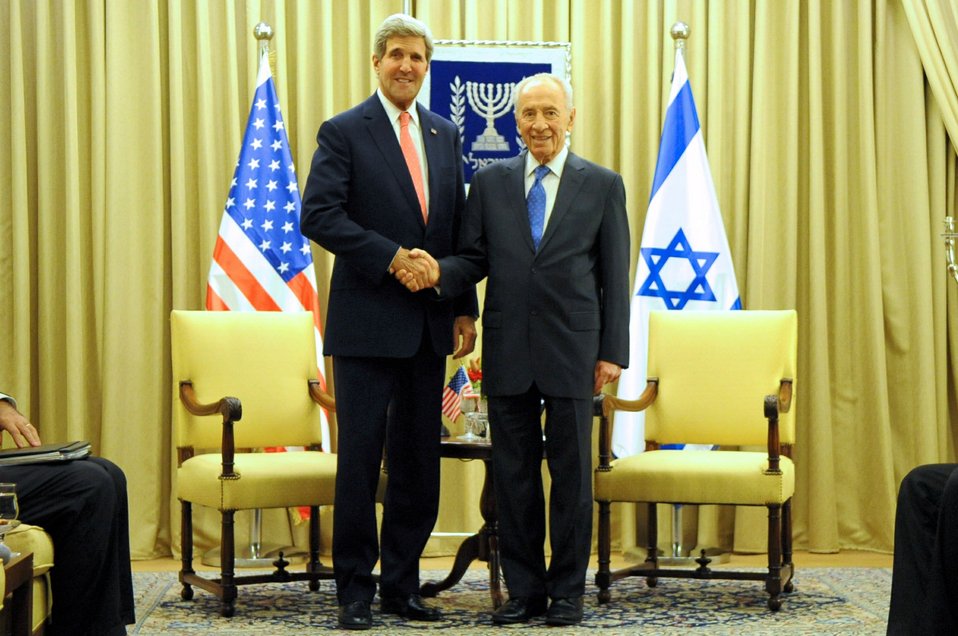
Secretary Kerry and Israeli President Peres Meet In Jerusalem

U.S. Secretary of State John Kerry and Israeli President Shimon Peres shake hands for reporters before making statements about Middle East peace at outset of a meeting in Jerusalem on November 6, 2013.